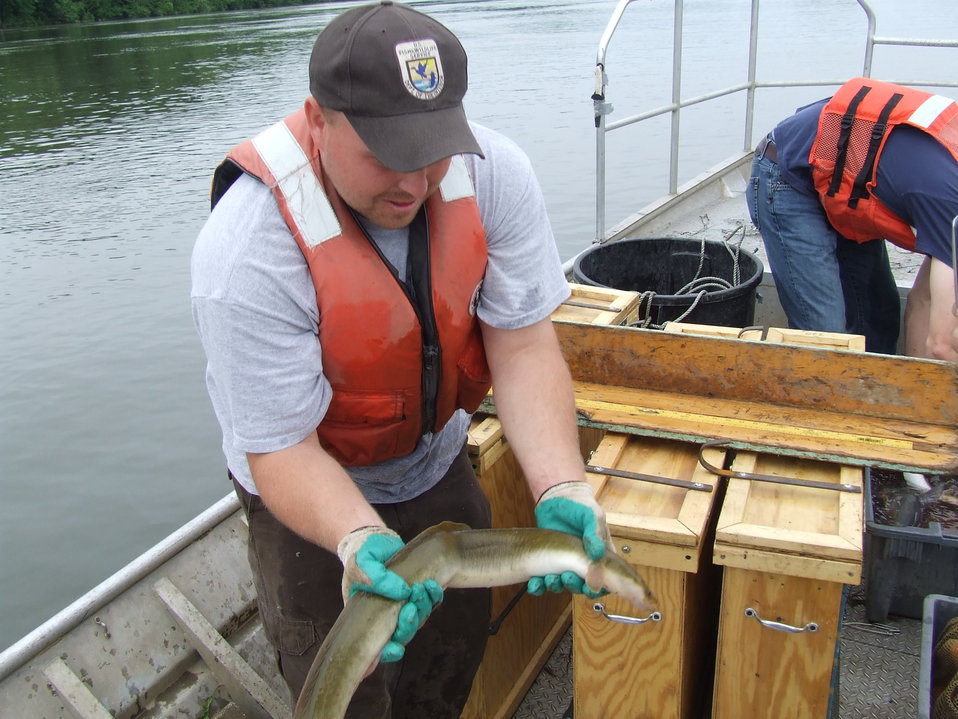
American eel

Colby Wrasse with the U.S. Fish and Wildlife Service Midwest Region holds an American eel from Osage River.